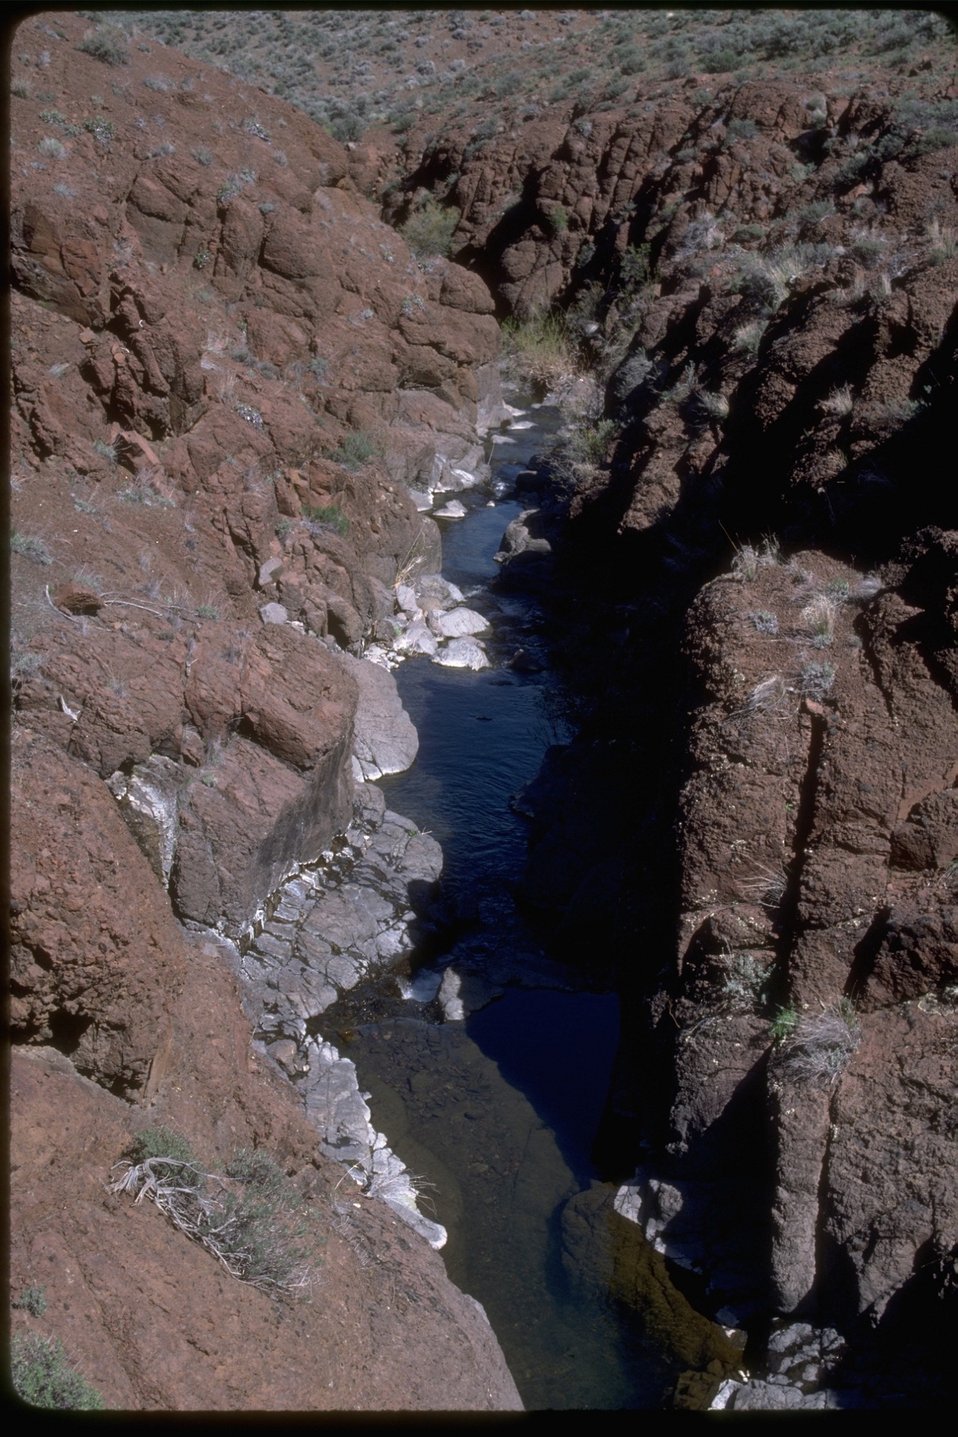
Rim view of creek through rocky red cliffs. OR 3-37